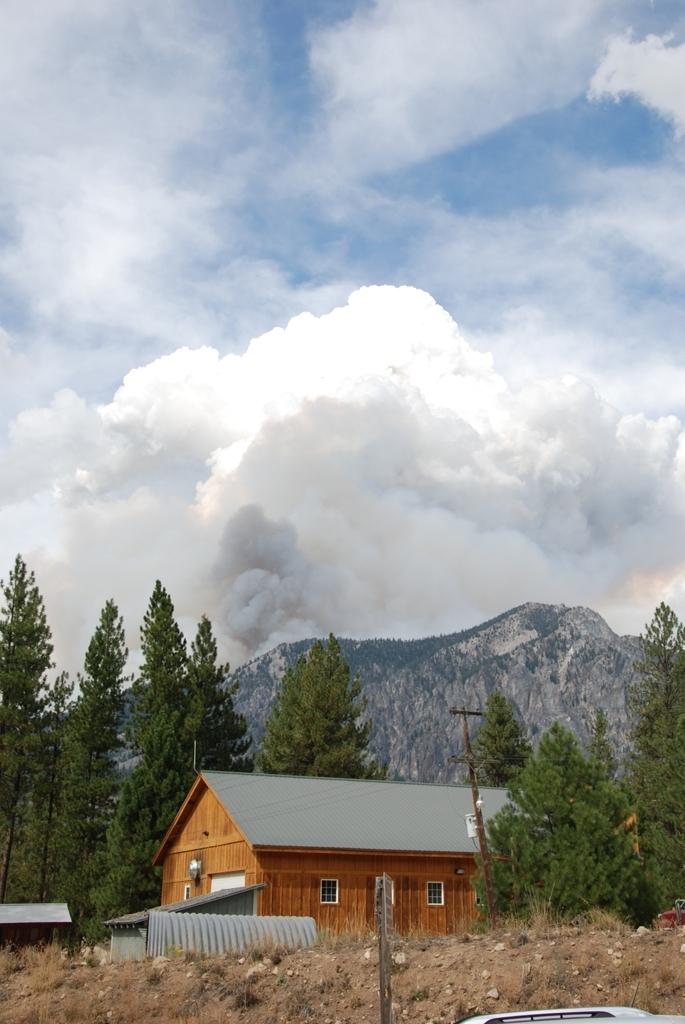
A smoke plume from the Little Queens Fire is visible to residents of Atlanta, ID. The Little Queens Fire in Boise National Forest near Atlanta, ID began on Aug. 17, 2013 is under investigation. The fire has consumed approximately 20,956 acres and is 10% contained.